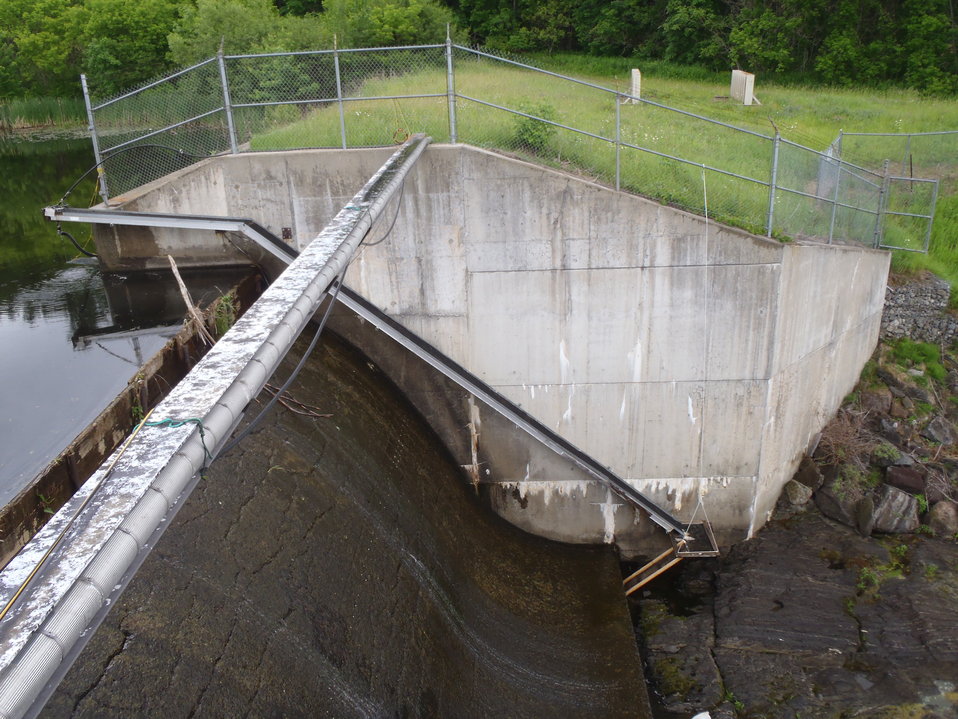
Eel pass at a dam in ME